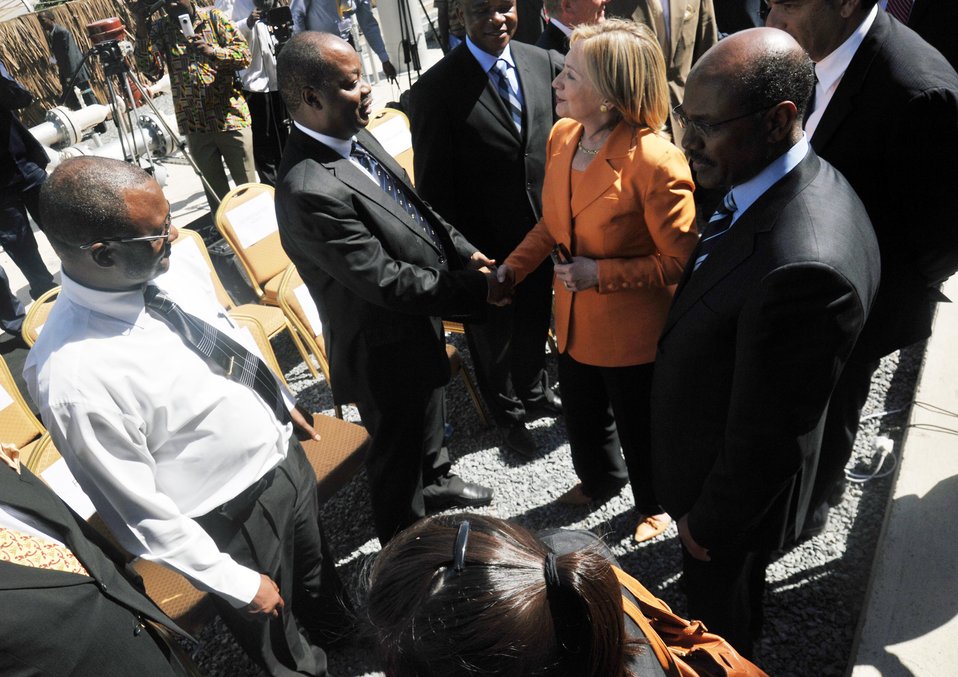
Secretary Clinton Shakes Hands With TANESCO's Managing Director Mhando

U.S. Secretary of State Hillary Rodham Clinton shakes hands with Tanzania Electric Supply Company's (TANESCO) managing director William Mhando at the Symbion Power Plant in Dar es Salaam, Tanzania, on June 12, 2011.